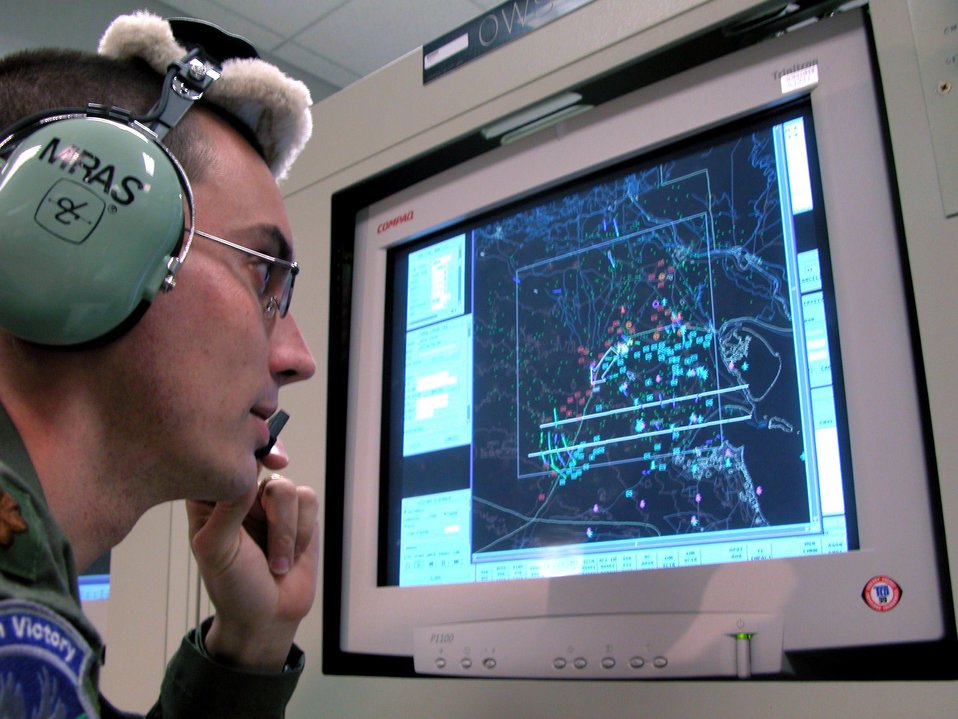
Watching from afar

ROBINS AIR FORCE BASE, Ga. (AFPN) -- Maj. Michael Mras, sensor management officer, monitors activity while sitting at an operator workstation. Mras is one of the many 116th Air Control Wing airmen who detect enemy ground movement and relay the information to forces on the ground and other airborne assets.